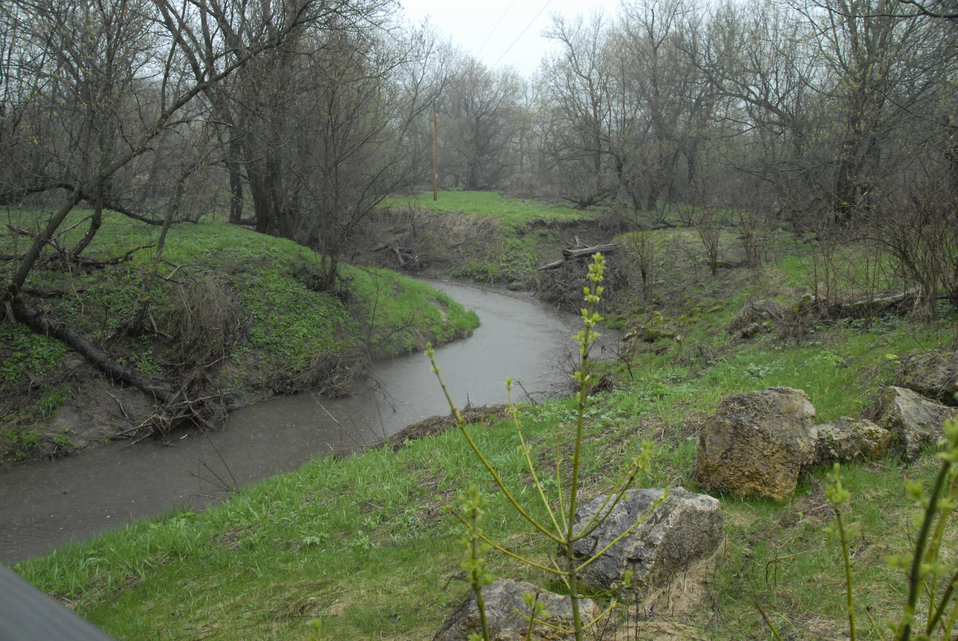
A rain-swollen stream flows through farmland in La Crosse, Wisconsin on April 25, 2008. The U.S. Department of Agriculture’s (USDA) Natural Resource Conservation Service (NRCS) has various programs to assist farmers and ranchers in implementing and maintaining conservation practices that will enable them to have more sustainable and profitable farms and ranches.